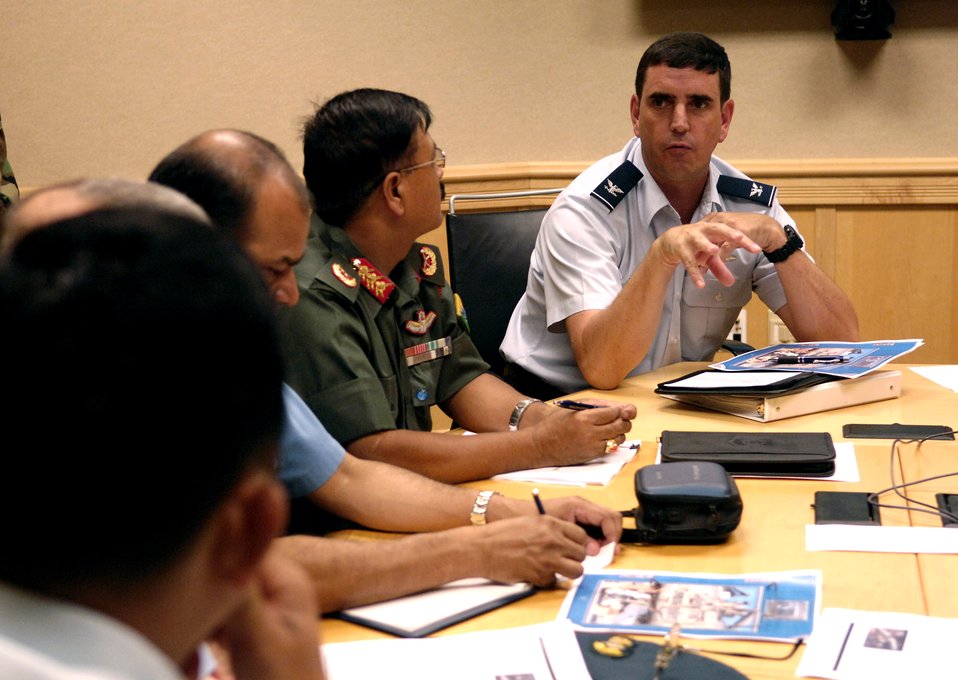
Communicating at PACRIM

Col. Vinnie Farrell discusses mishap investigation procedures with members of the Pacific Airpower Symposium Sept. 19 during a breakout session at the Aloha Conference Center at Hickam Air Force Base, Hawaii. The PACRIM Symposium provides a forum to communicate the value of U.S. engagement with nations of the Asia-Pacific region and the United States' commitment to the region to internal, local, national and regional audiences. Colonel Farrell is from 13th Air Force.